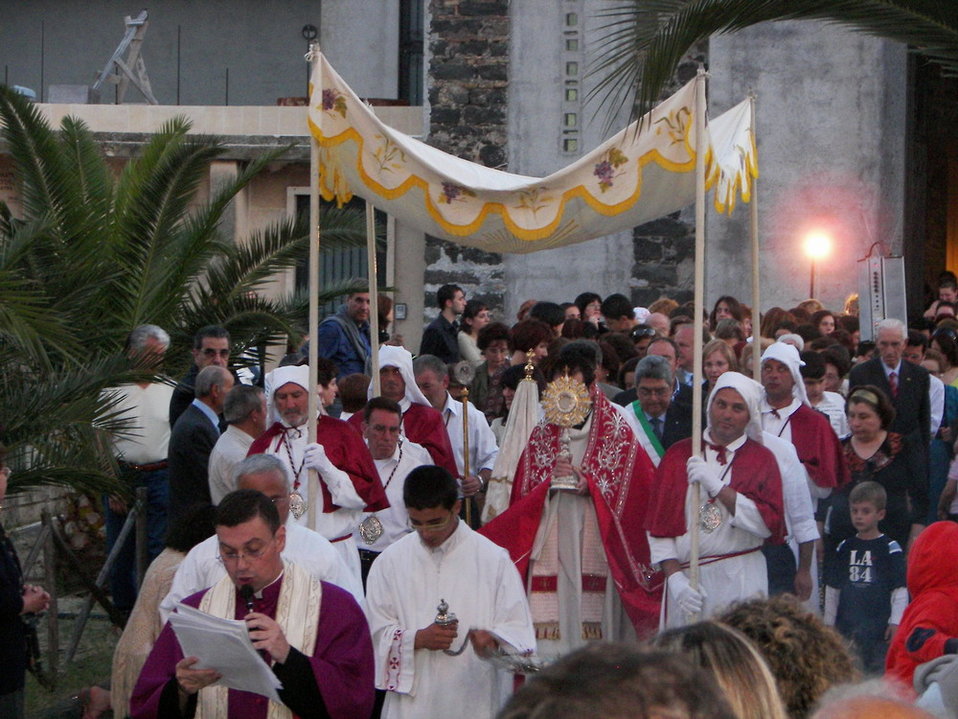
Italiano: La Processione del Corpus Domini di it:Santa Maria di Licodia.